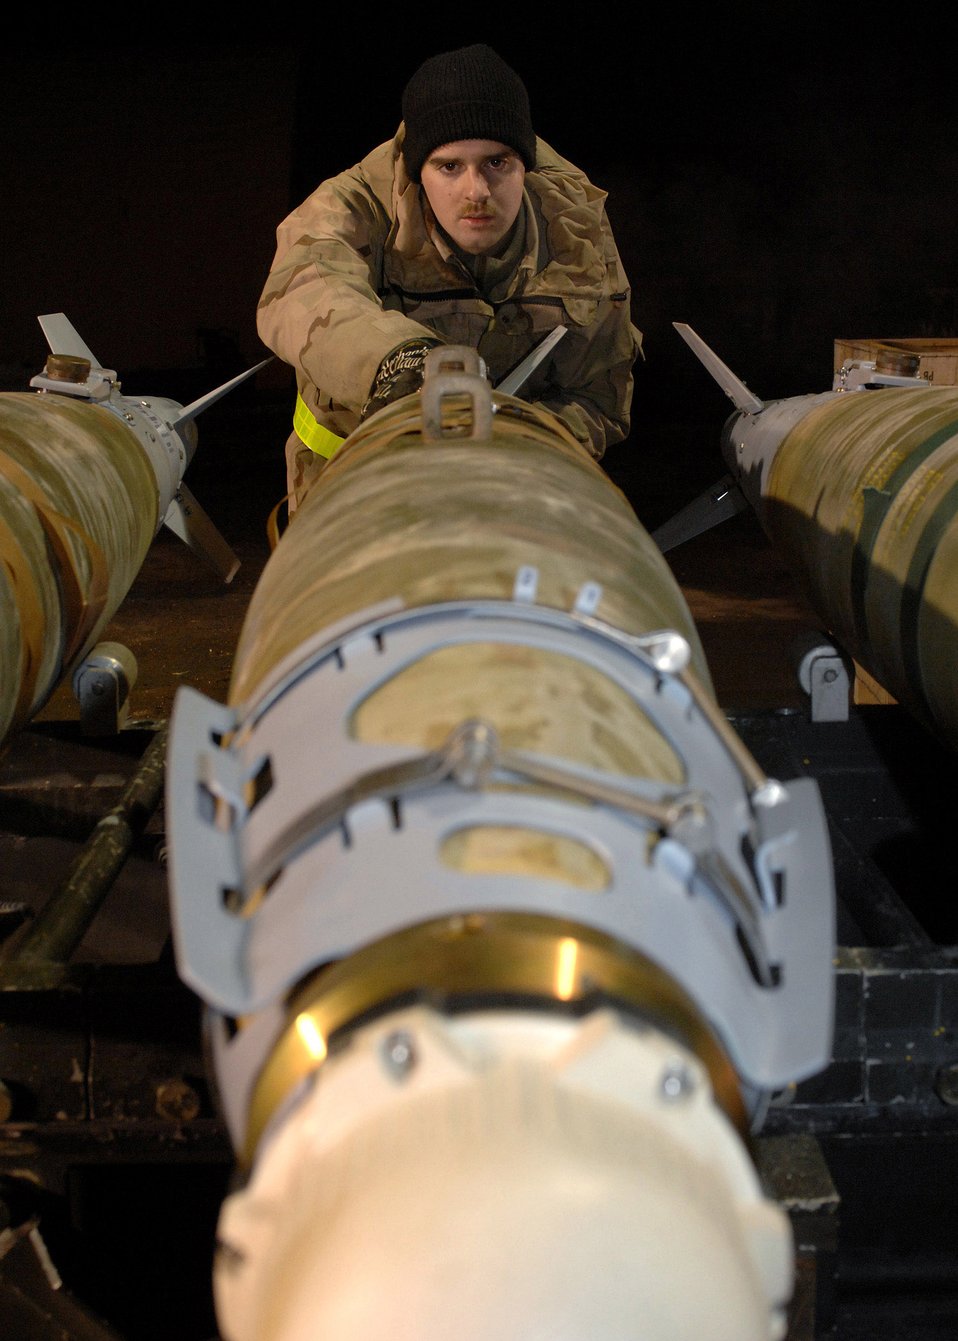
How to build a bomb

Airman 1st Class Ryan Thompson aligns strakes with lugs on a guided bomb unit-38 bomb Feb. 14 at Bagram Air Base, Afghanistan. Munitions troops assembled 24 bombs in a 2-hour time frame. Airman Thompson is a 455th Expeditionary Maintenance Squadron munitions troop deployed from the 52nd Equipment Maintenance Squadron, Spangdahlem Air Base, Germany.